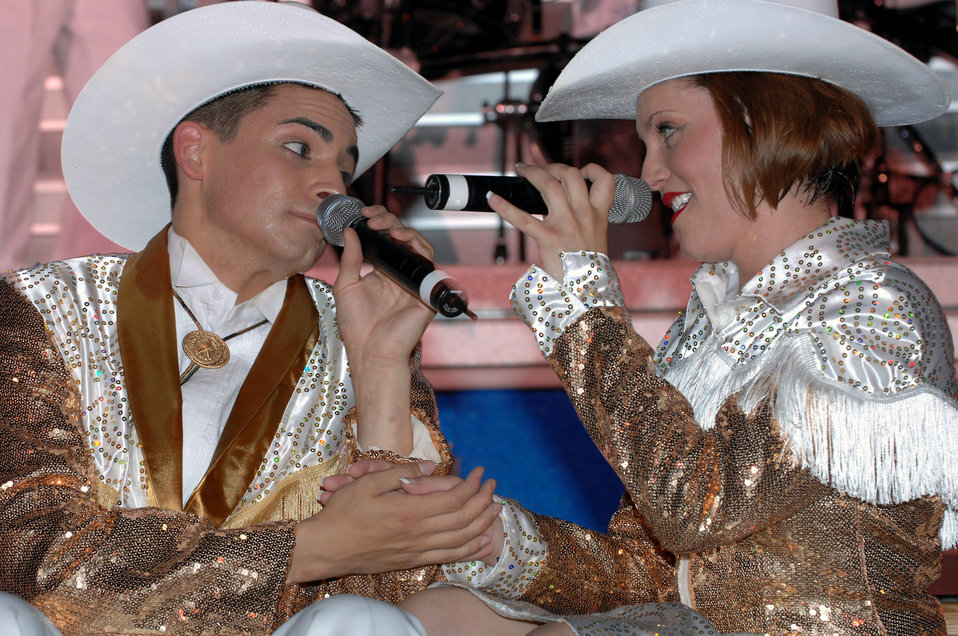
Tops in Blue Airmen strut their stuff

Tops in Blue Airmen sing May 24 at the Tays Center near Holloman Air Force Base in Alamogordo, N.M. The 40-member group's goal is to enhance mission productivity for Air Force members around the world. Tops in Blue showcases music, dance and comedy, all performed by active-duty Airmen who perform 90 minutes of non-stop live entertainment.